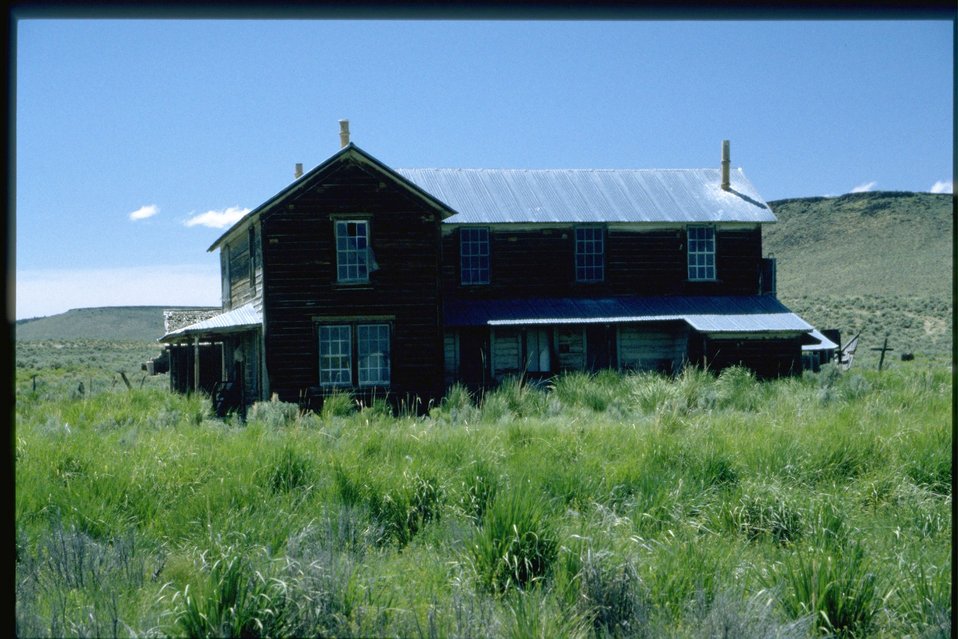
Far shot of Shirk Ranch.